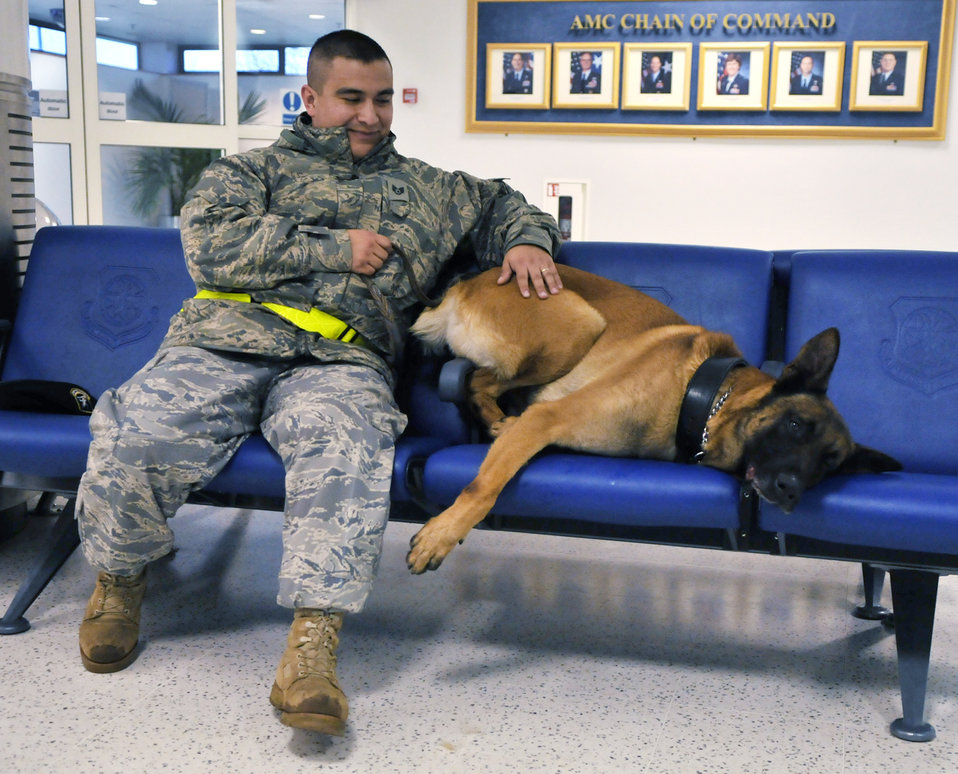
Move over, give me some room

Otto, a Belgian Malinois, takes a quick break with his handler, Staff Sgt. Eric Morales, 100th Security Forces Squadron, after sniffing around the base passenger terminal Jan. 22, 2010, at Royal Air Force Mildenhall, England.